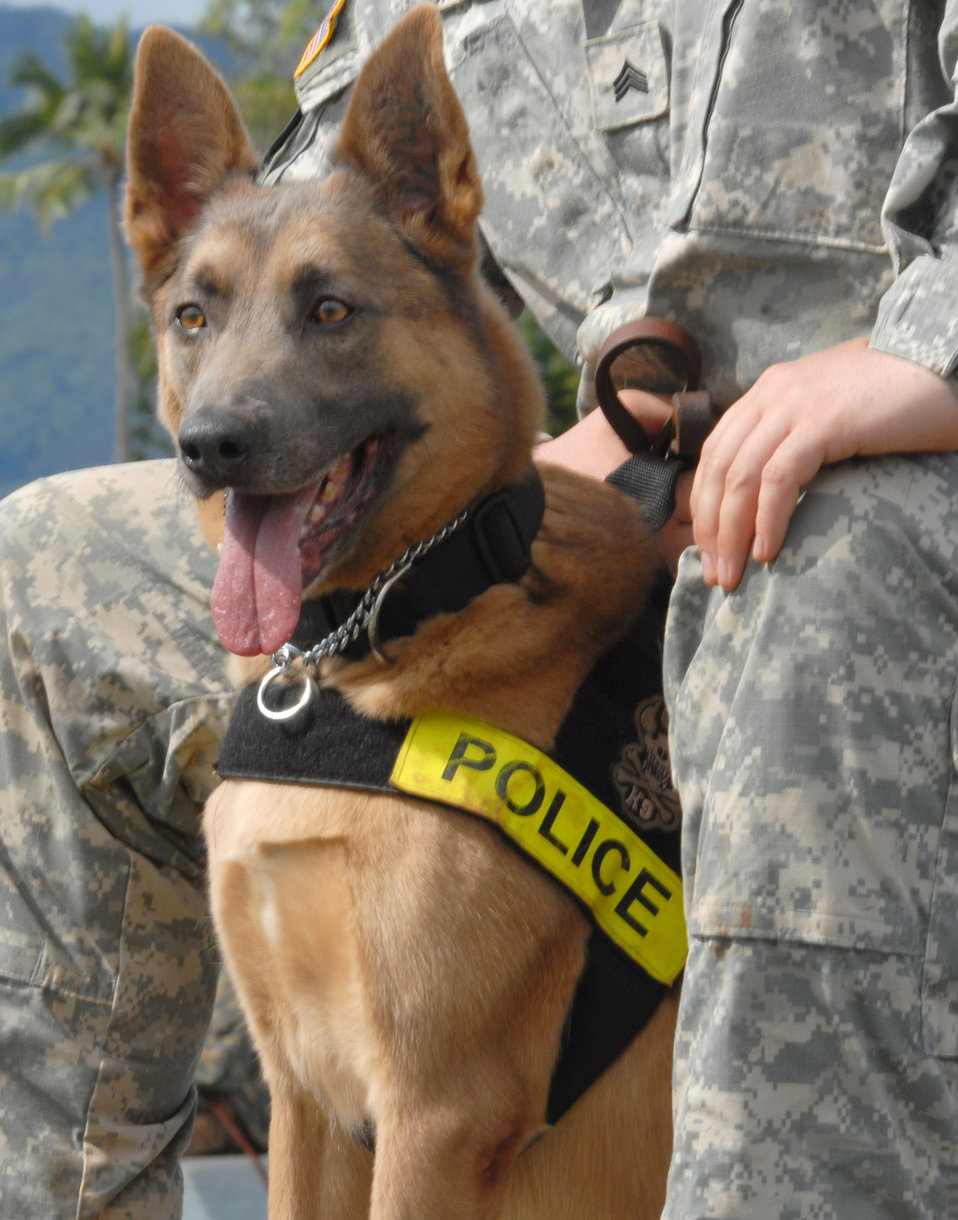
Working dog competition

One of the military working dogs waits for his